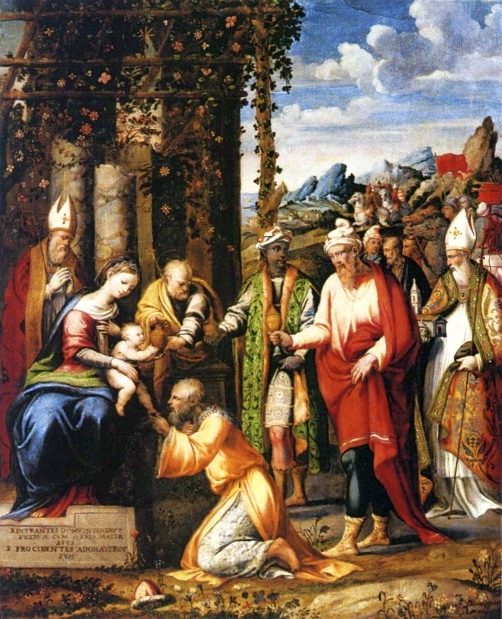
Ortolano Adoration of the Magi